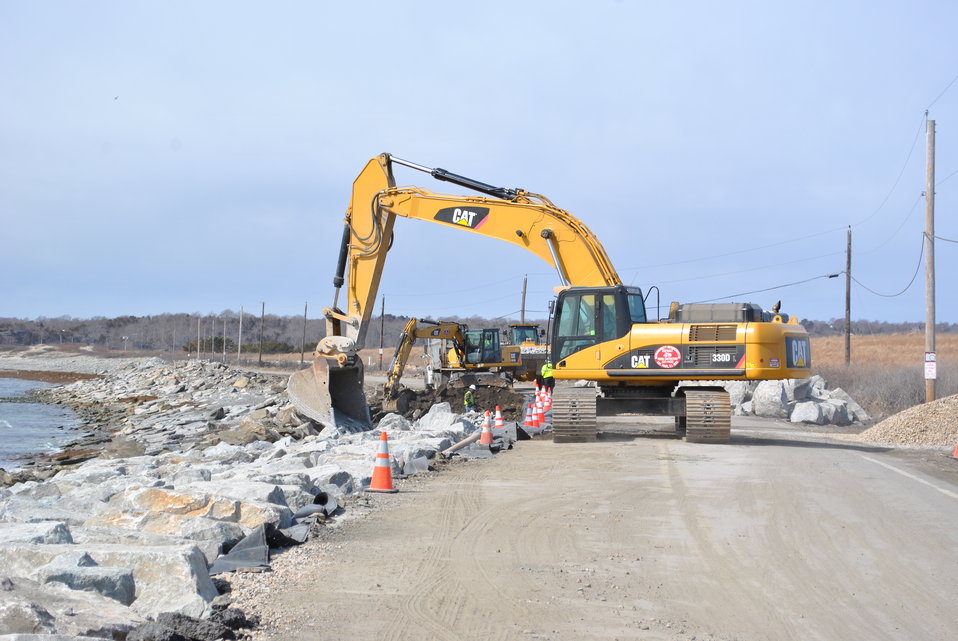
Repairs begin at Sachuest Point Road (RI)

Construction work has begun on the public road that leads to Sachuest Point National Wildlife Refuge. The Rhode Island Department of Transportation is rebuilding about 1,500 feet of Sachuest Point Road and providing armor stone to protect the road from further erosion during storm surges with high surf. The Service and the Federal Highway Administration are funding the repairs, which are expected to be complete in May.